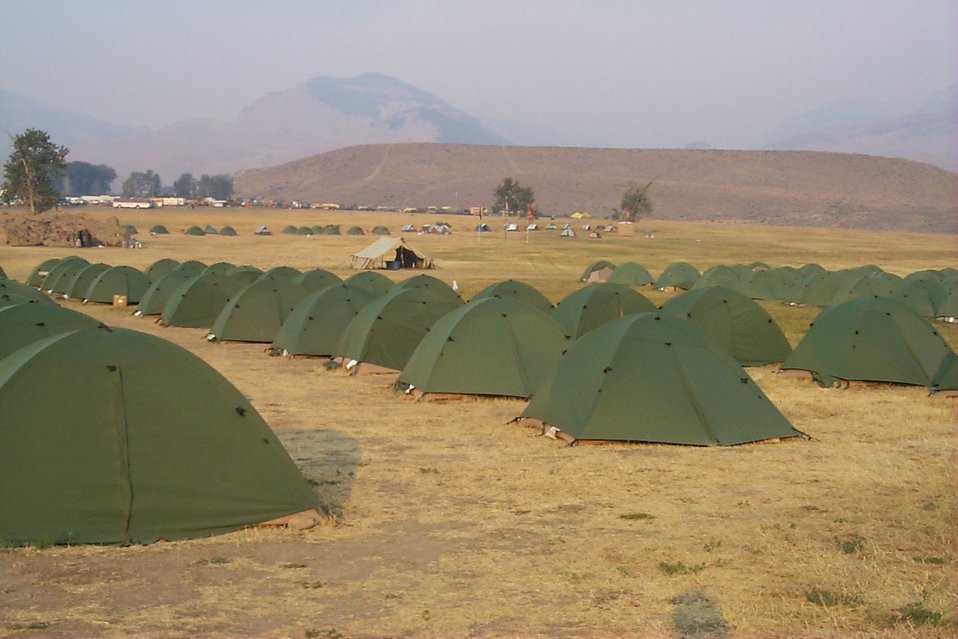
Camp Fire Clearwater Fire Salmon Field Office USRD Upper Snake River District